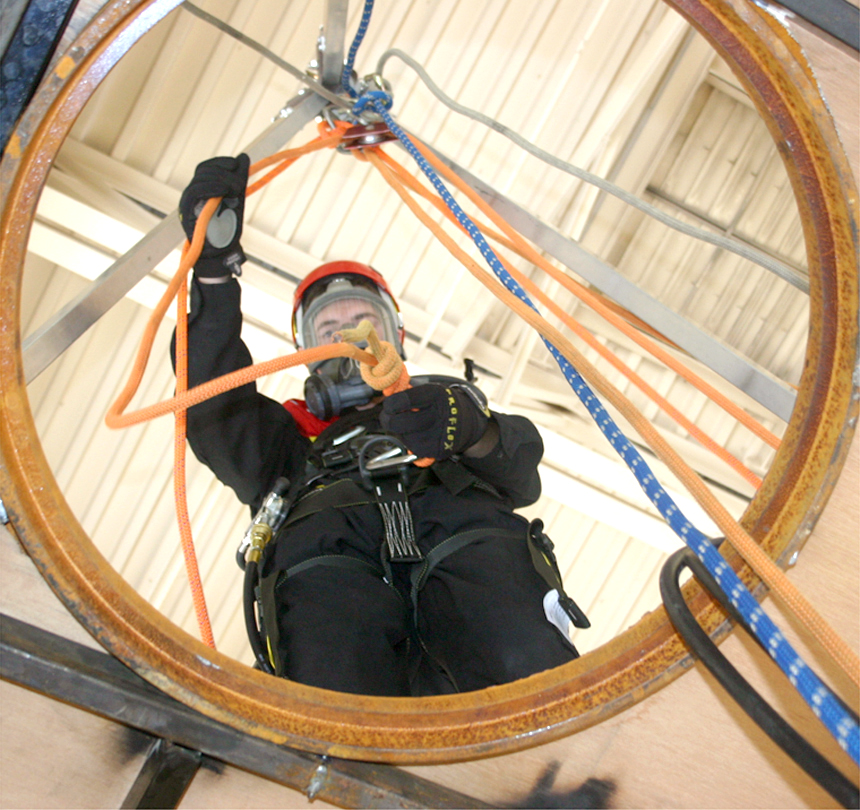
Think inside the tunnel

LAUGHLIN AIR FORCE BASE, Texas -- Free Lucas prepares to descend into a confined space during rescue training here. During the two-week training, firefighters learned how to perform rescue operations in confined spaces like tunnels. Training was conducted by a special rescue team from Forth Worth. Mr. Lucas is a firefighter with the 47th Civil Engineer Squadron.